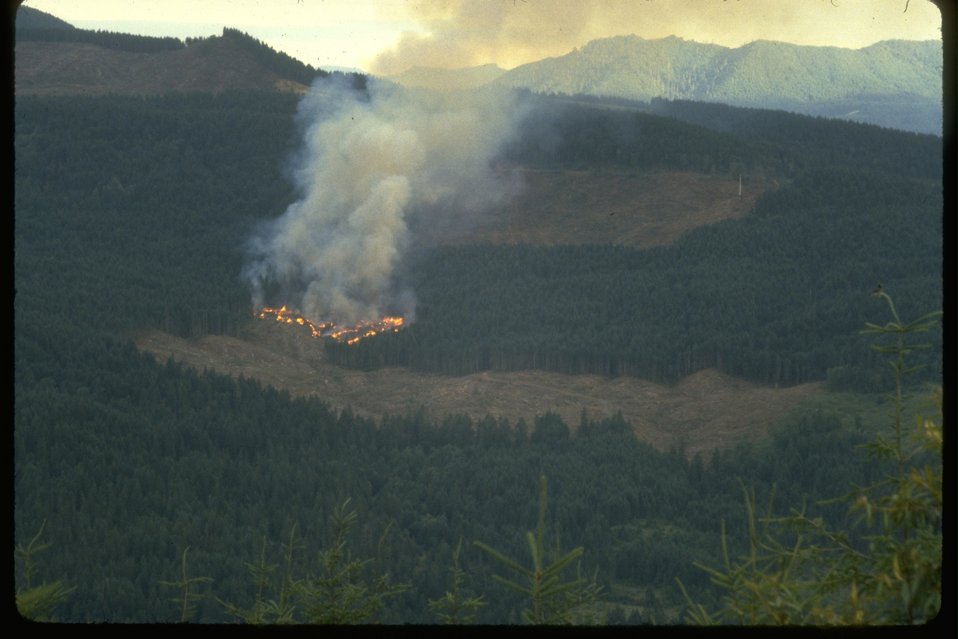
Prescribed fire burning.